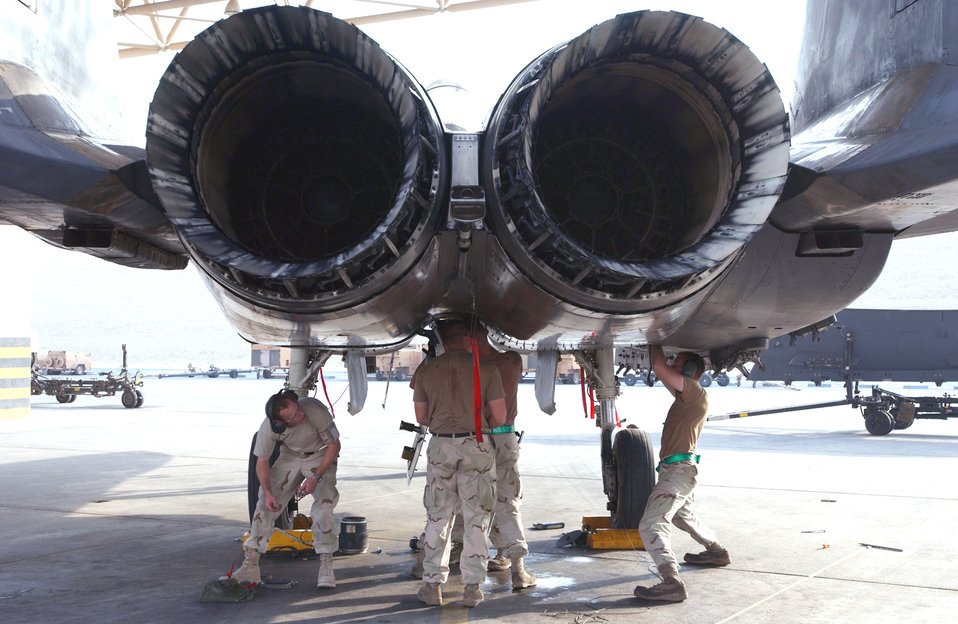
Keeping the strike in the Strike Eagles

Maintainers from the 335th Aircraft Maintenance Unit at Seymour Johnson Air Force Base, N.C., work on an F-15E Strike Eagle at a forward-operating base in Southwest Asia Sept. 1.